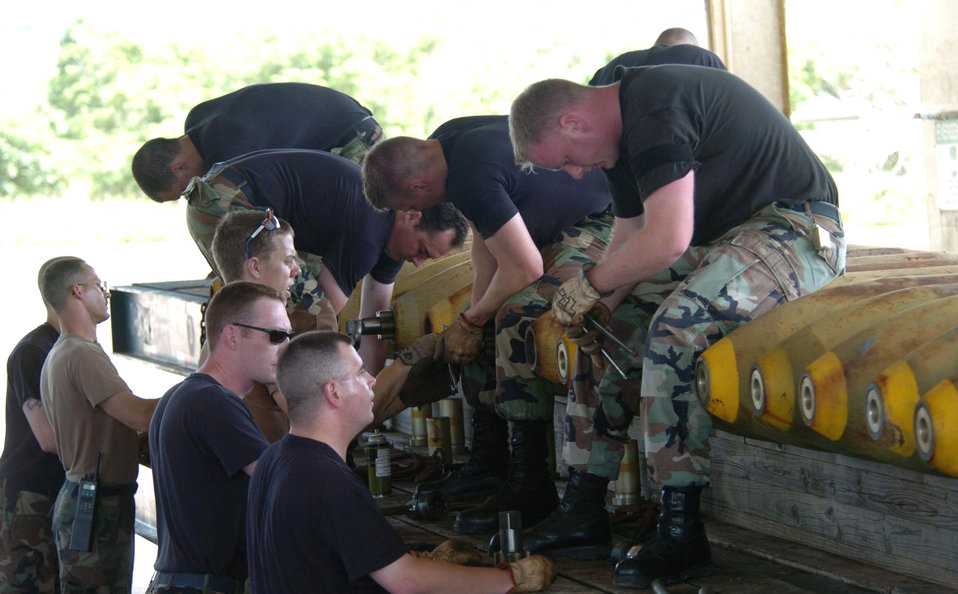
Minot B-52 ground crews deployed at Guam

ANDERSEN AIR FORCE BASE, Guam -- Munitions workers assemble M-117 bombs here. The Airmen are from the 5th Bomb Wing at Minot Air Force Base, N.D., and supporting B-52 Stratofortress training operations in the Pacific. The wing is the first rotation to deploy to Guam following the decision to station a bomber force here.